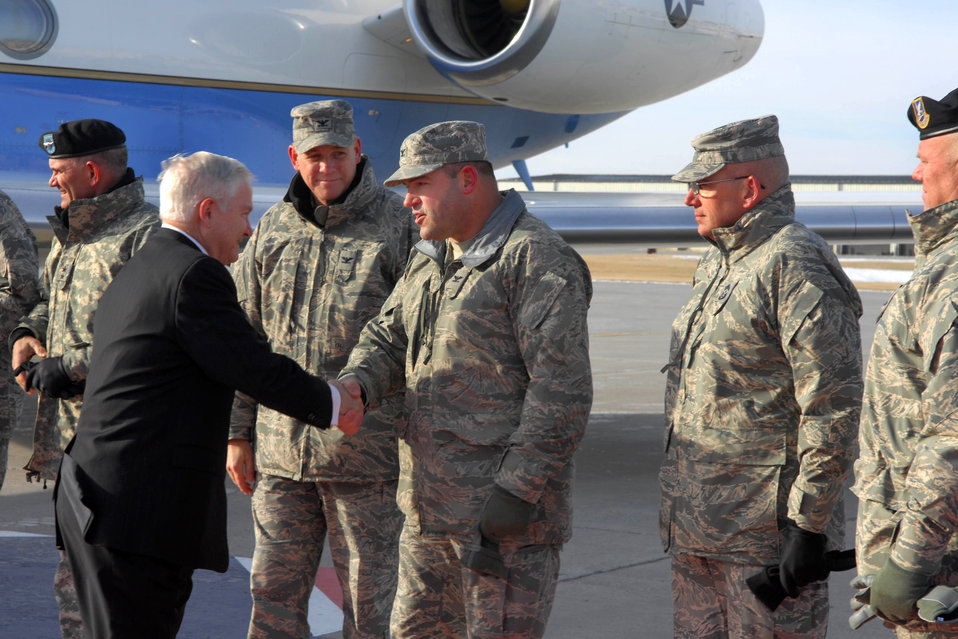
Nuclear mission vital to U.S. security, Gates tells Minot Airmen

Defense Secretary Robert M. Gates tells Airmen at Minot Air Force Base, N.D., that the Air Force's nuclear mission, and maintaining its long tradition of excellence, are vital to the security of the United States during a visit Dec. 1.